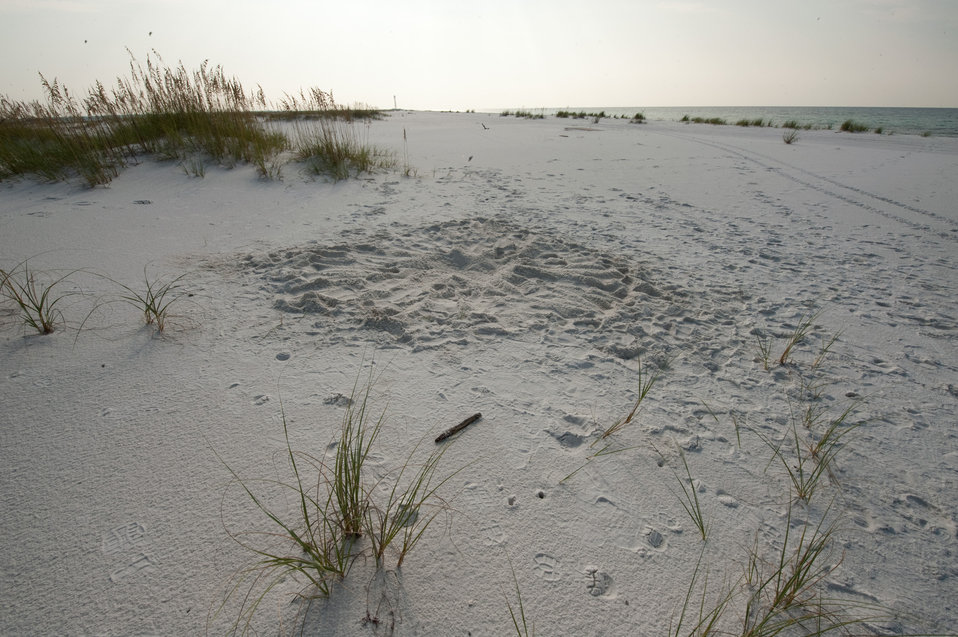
Turtle Eggs avoid Gulf Oil Danger

After 112 Loggerhead sea turtle eggs were excavated from the beach at Eglin Air Force Base, Florida, on August 9, 2010, the nest hole was filled with sand.